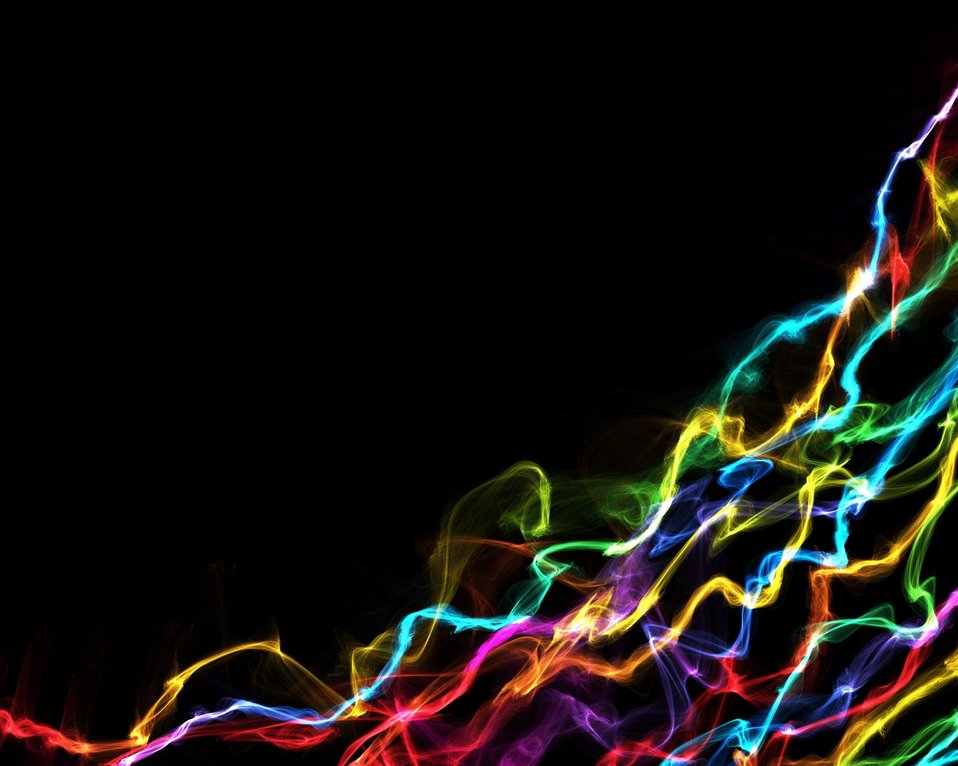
Rainbow ribbon background

Rainbow thread ribbon designed on a black background..